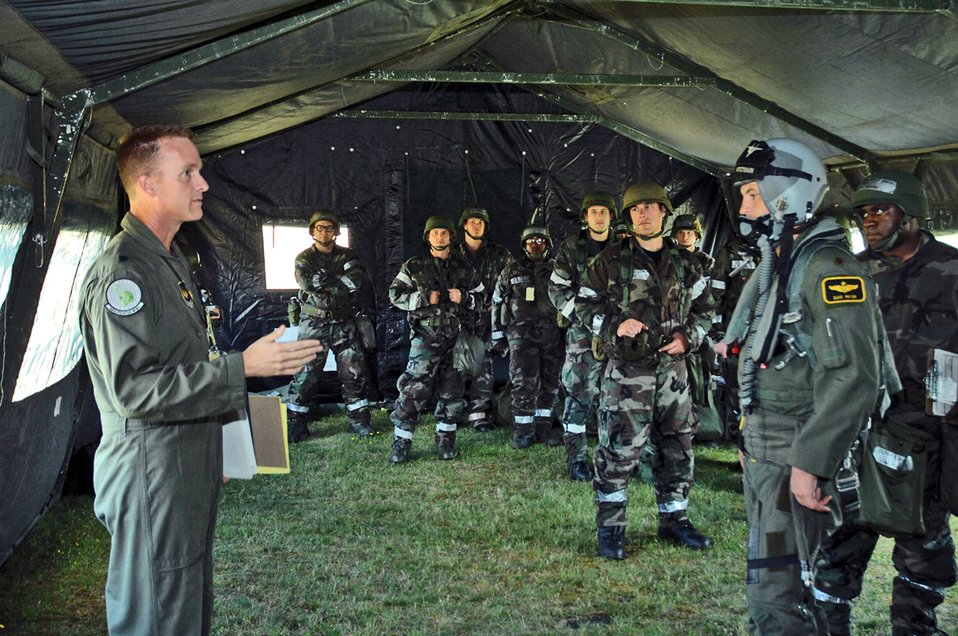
Ops Eval challenges Airmen

Lt. Col. Doug Jenkins briefs 48th Fighter Wing Airmen during an operations evaluation July 31 at Royal Air Force Lakenheath, England. In this portion of the ops eval, the squadron operations center was